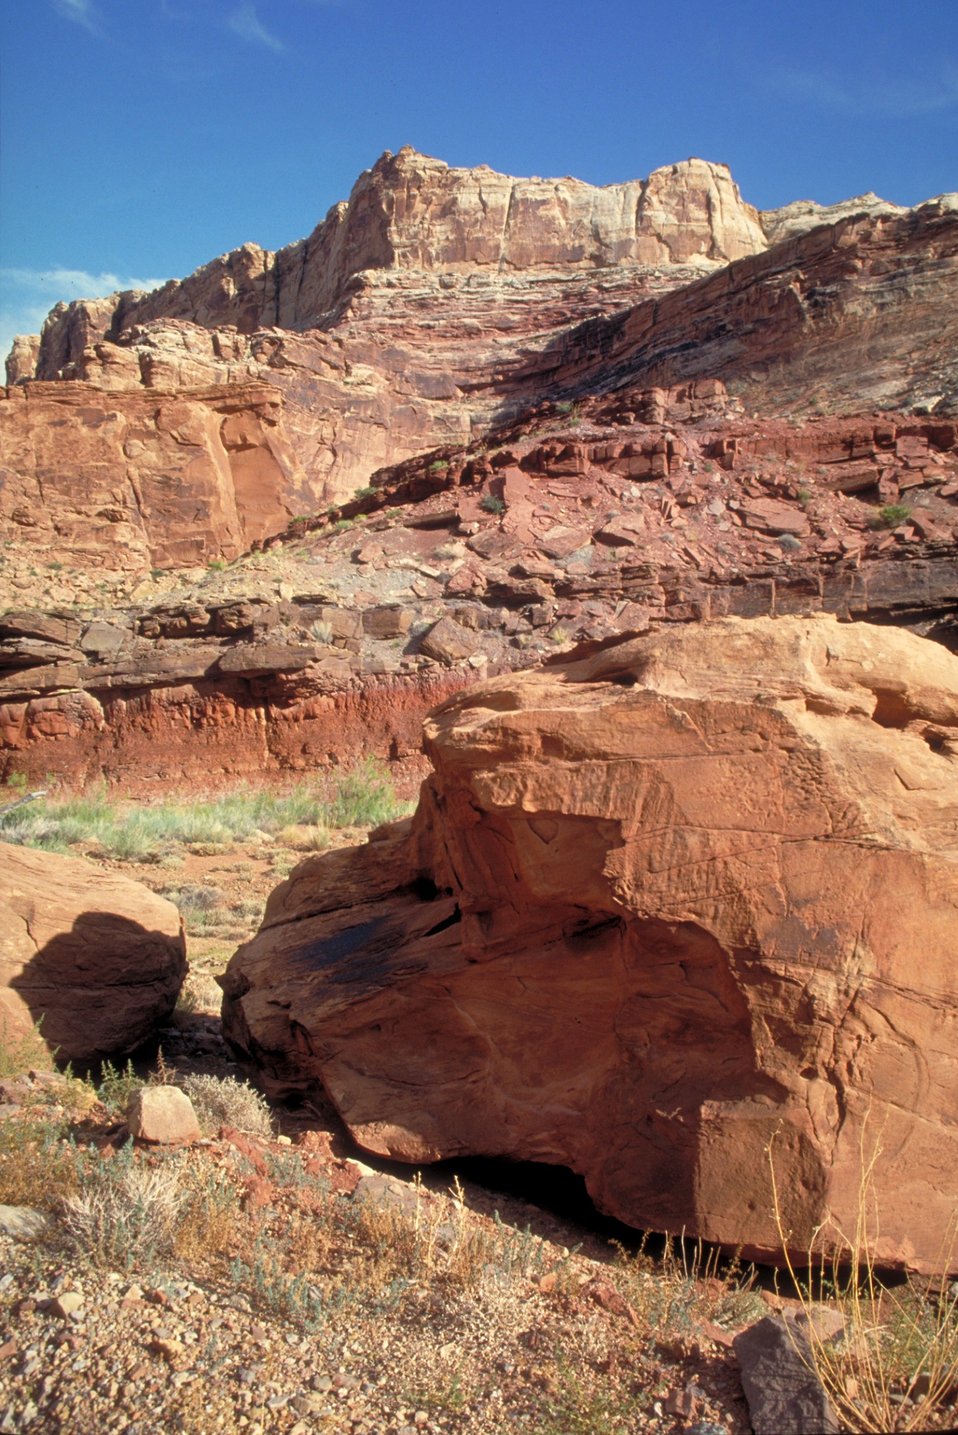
Black Dragon Wash near Green River, Utah.